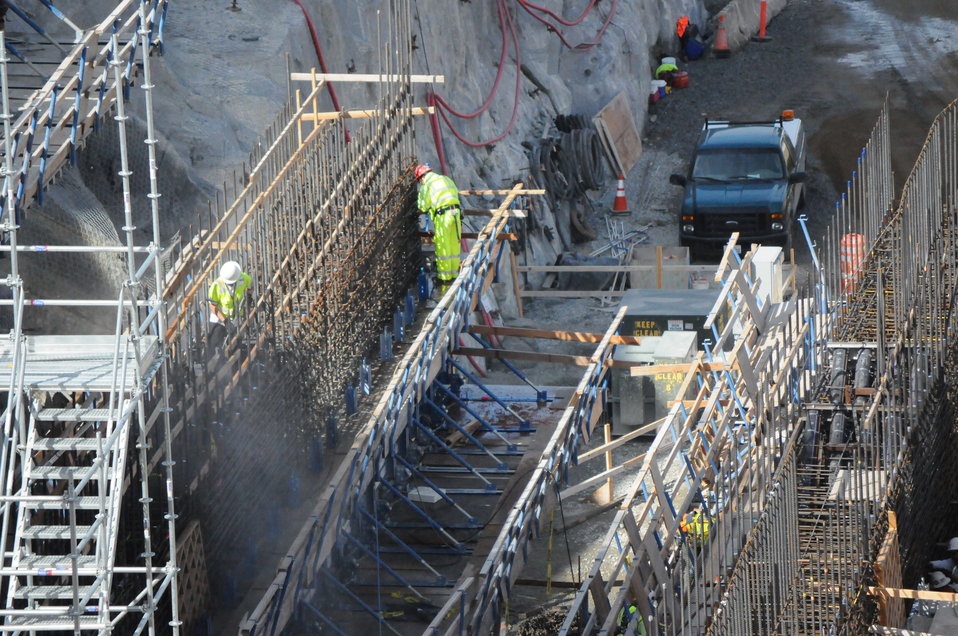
Placing Steel Rebar

Contractors working for the U.S. Army Corps of Engineers Sacramento District construct the support system for the rising Folsom Dam auxiliary spillway on March 14, 2013.